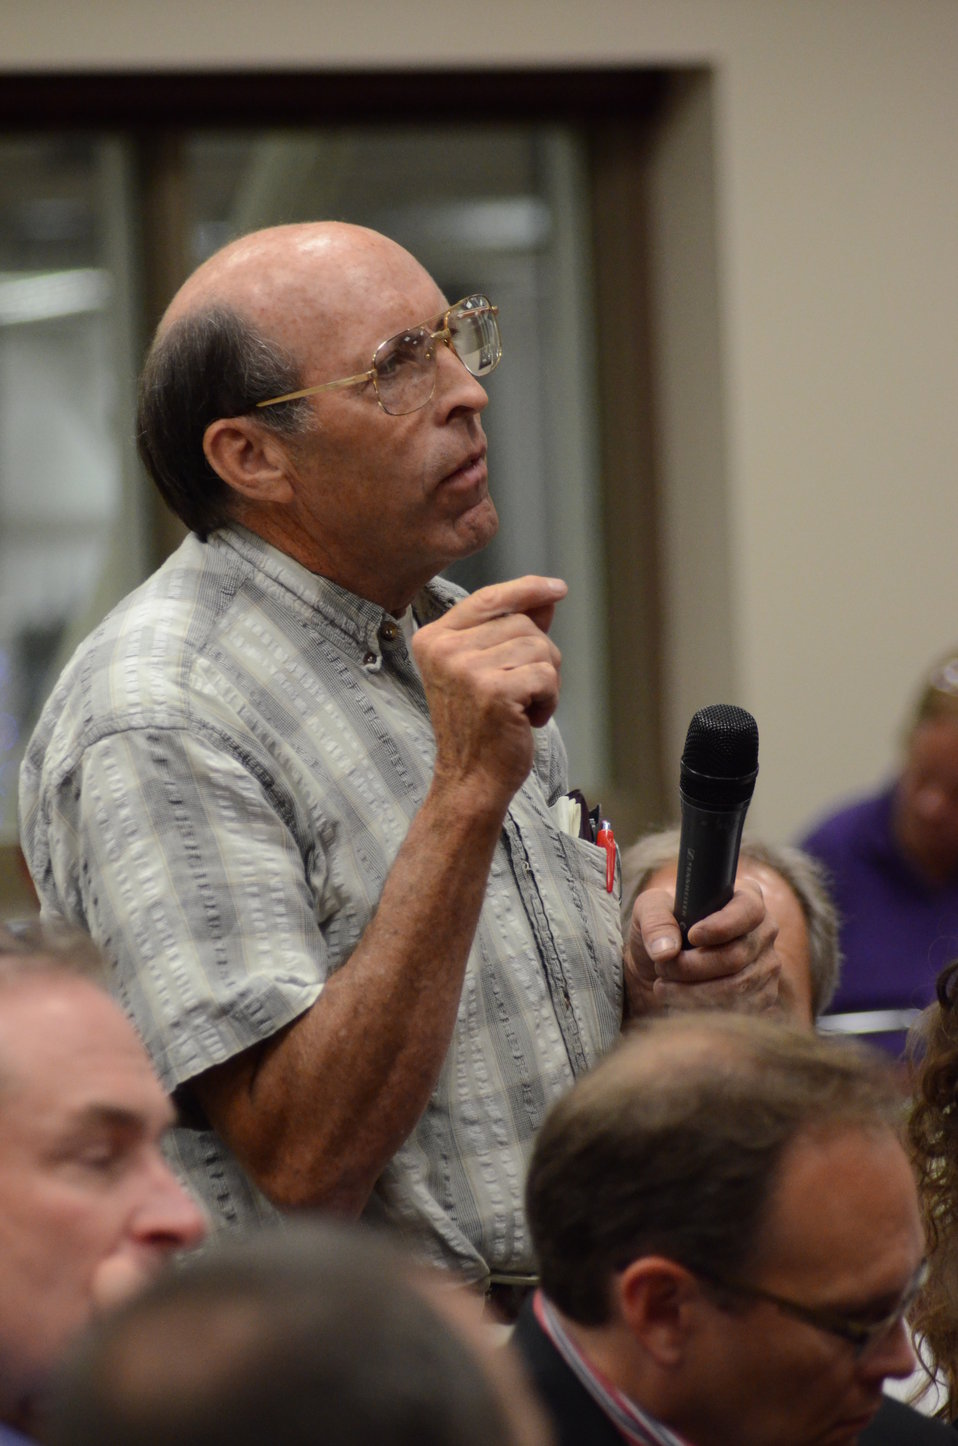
A member of the audience asks Agriculture Secretary Tom Vilsack speaks at the White House Rural Forum at the Wisconsin State Fair, in West Allis, WI, on Thursday, Aug. 4, 2010, to businesses and community leaders, farmers and ranchers to explore ways federal, state and local officials can work together to improve economic conditions and create jobs. The forum is part of a series of White House Rural Roundtables that are being held across the country this summer with senior Administration officials.